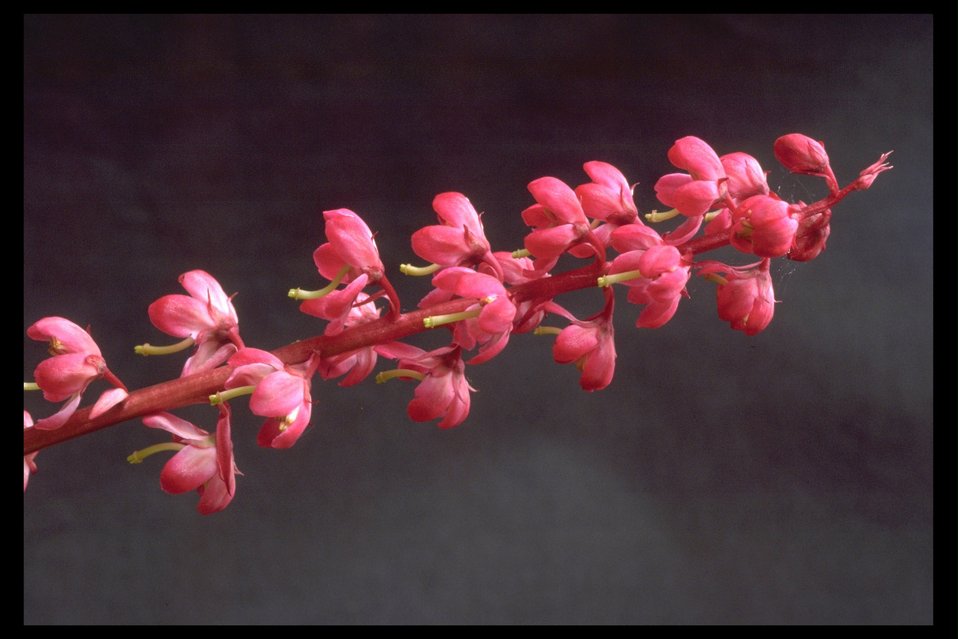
Close up of Pink Wintergreen, also called the Pink Pyrola (Pyrola asarifolia) at Upper Trail Creek.